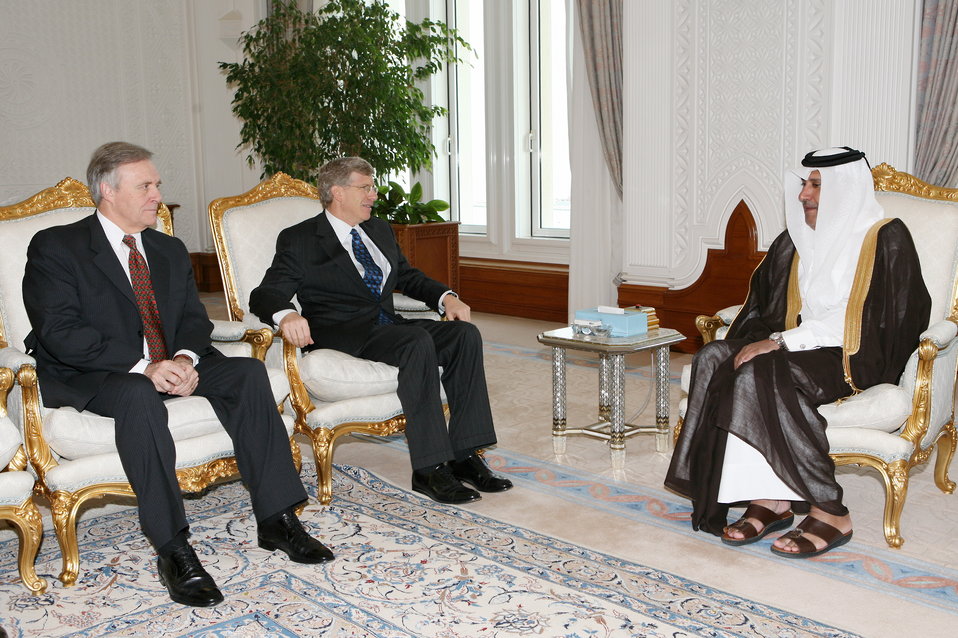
Deputy Secretary Poneman meets with Qatar Prime Minister Sheikh Hamad Bin Jassim Bin Jabr Al-Thani.